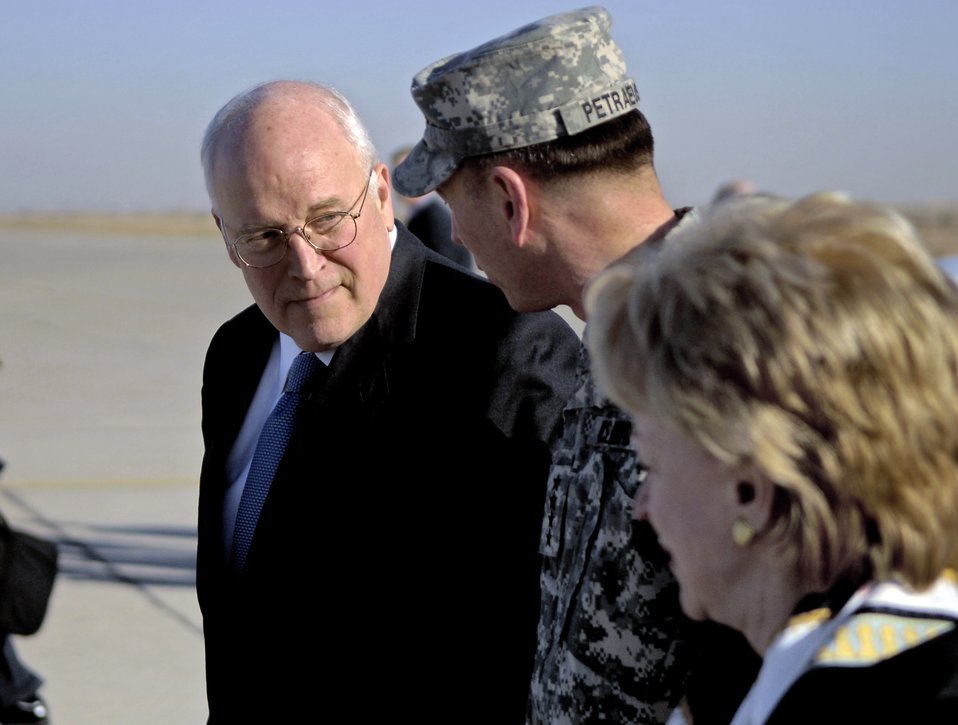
Vice president arrives in Baghdad via Sather

Vice President Dick Cheney talks with Army Gen. David Petraeus March 17 at Sather Air Base, Iraq. General Petraeus is the commanding general of the Multi-National Force - Iraq.